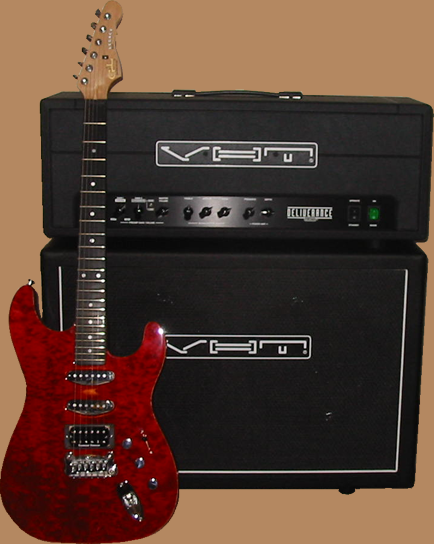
I made this file, it is my personal equipment.